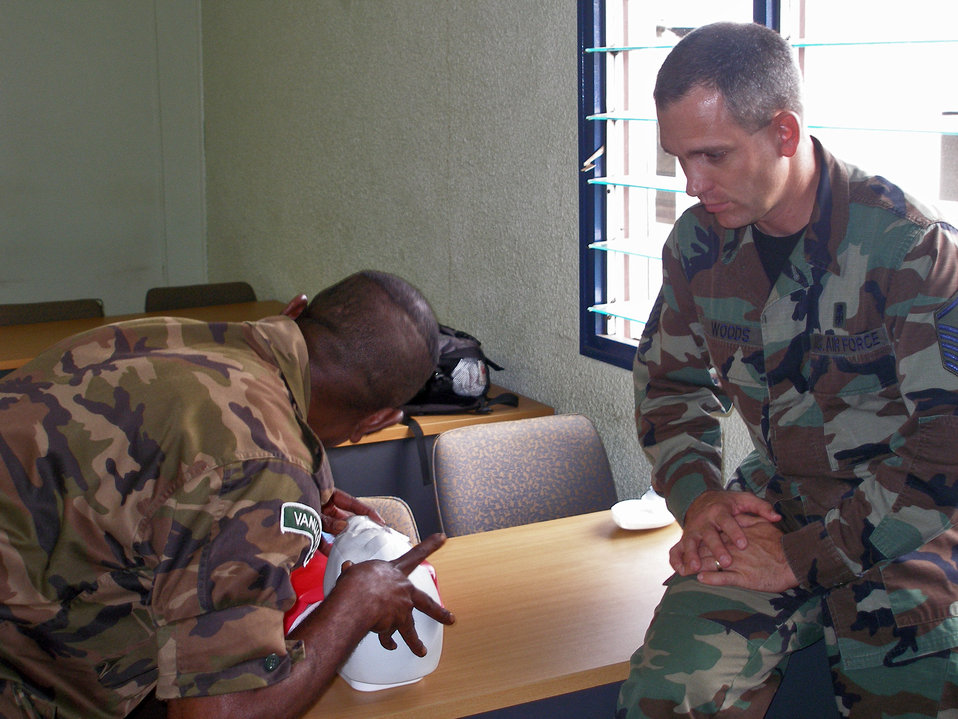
Humanitarian mission impacts team, residents

Master Sgt. Bob Woods watches a member of the Vanuatu police force perform basic life support techniques on a manikin July 25 on the island nation of Vanuatu. Sergeant Woods is an independent duty medical technician from the Joint POW/MIA Accounting Command from Hickam Air Force Base, Hawaii. He was part of a team that taught basic life support and self-aid buddy care to police, immigrations and customs, and paramedics . The team was part of the Oceania Humanitarian Assistance Mission that brought medical, dental and engineering personnel to perform civil assistance projects on Vanuatu, Kiribati and Nauru.